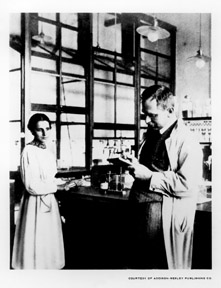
Lise Meitner and Otto Hahn in their laboratory at the Kaiser Wilhelm Institute in Berlin.